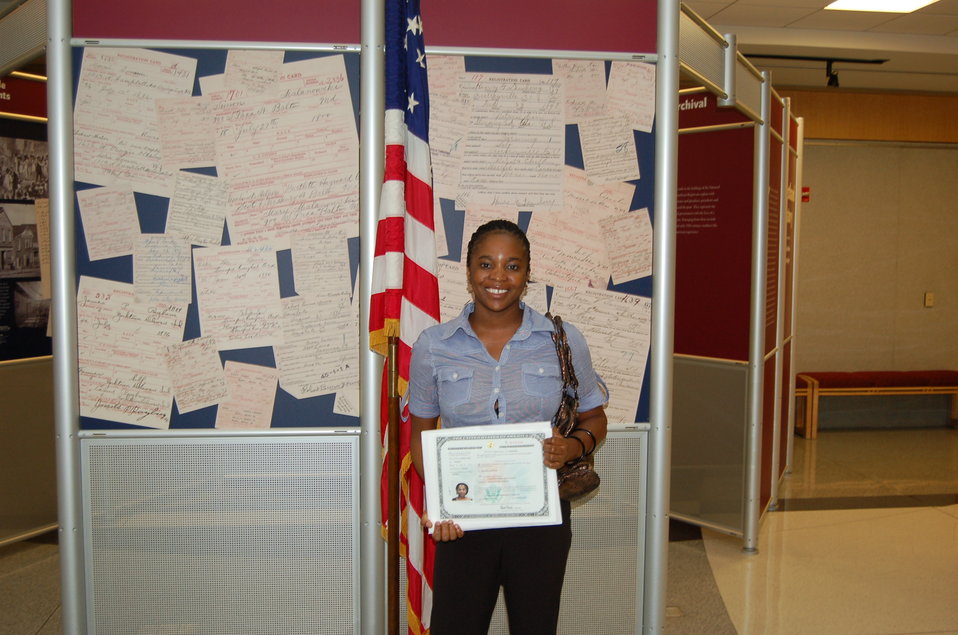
New Citizens